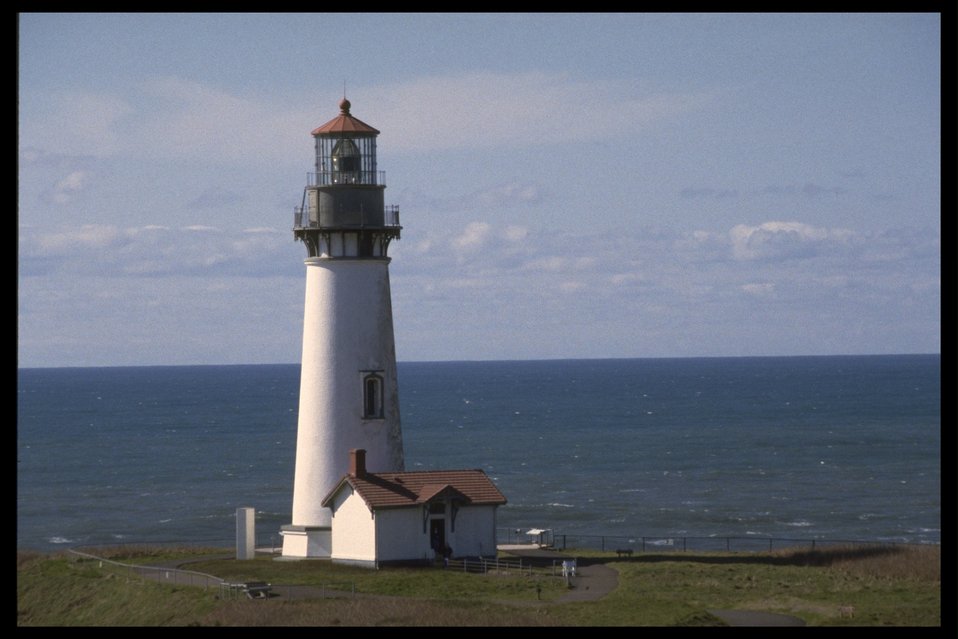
Yaquina Head Lighthouse.